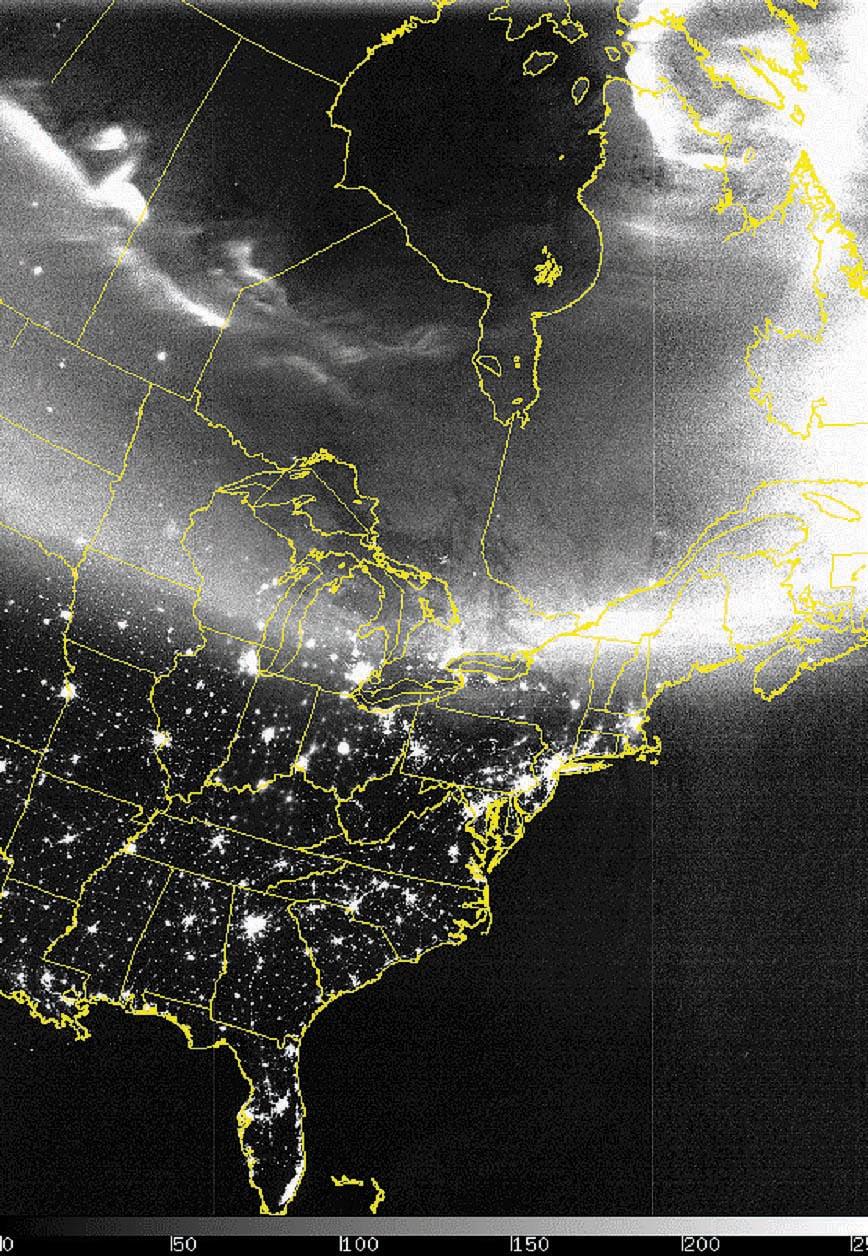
Northern lights

COMPOSITE IMAGE -- This Defense Meteorological Satellite Program satellite network image uses a combination of infrared data with a specialized visual sensor that can see lights at night. The aurora is seen from the Dakotas through Maine on Oct. 29.